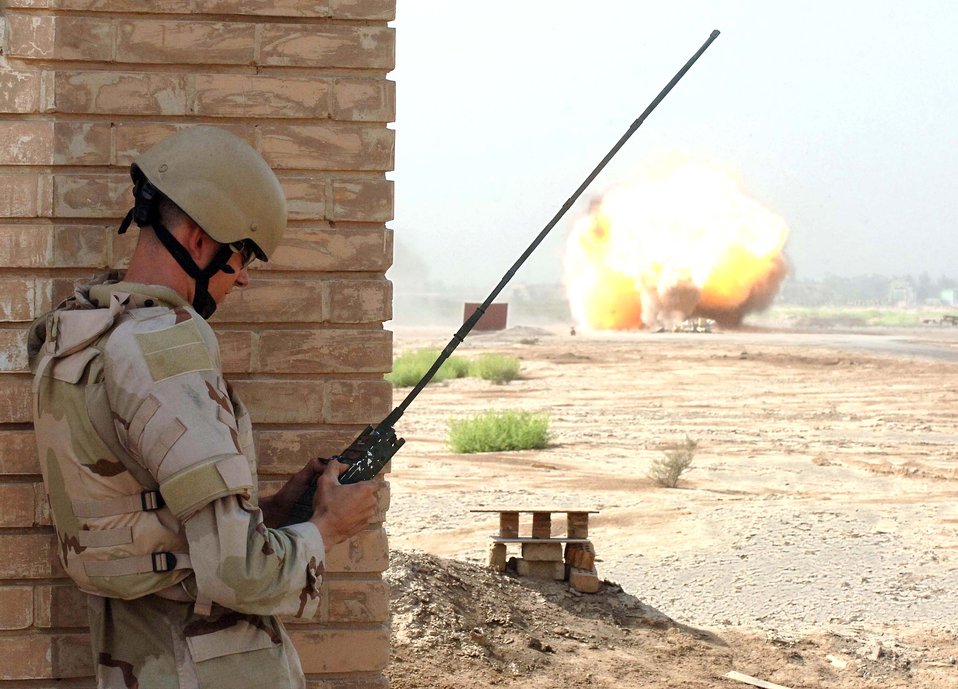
Baghdad boom

Staff Sgt. Andrew Smith commands a detonation of explosives on a range adjacent to Baghdad International Airport, Iraq, on Aug. 18. The Air Force explosive ordnance disposal unit at the airport is responsible for a 500-square mile area around Baghdad as part of a joint task force. Sergeant Smith is an EOD technician deployed to the 447th Air Expeditionary Group from Ramstein Air Base, Germany.